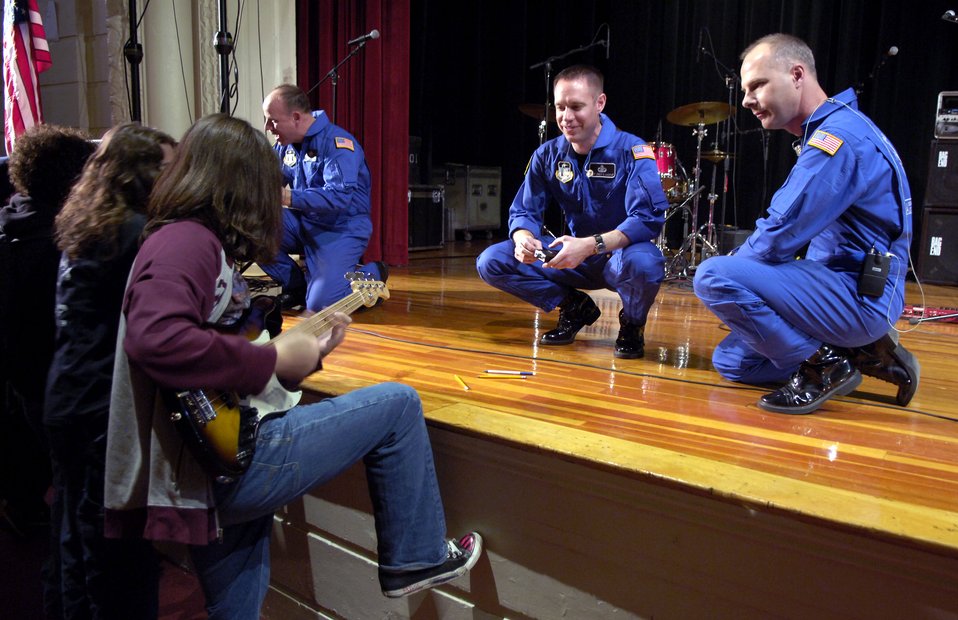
Academy Band

Master Sgt. Jeremy Laukhuf (left) and Tech. Sgt. Stephen Brannen talk with students from Mamaroneck High School in New York following a concert at the school Nov. 22. The Airmen are members of the U.S. Air Force Academy Band, Blue Steel. The performance was in celebration of the Air Force's 60th Anniversary.